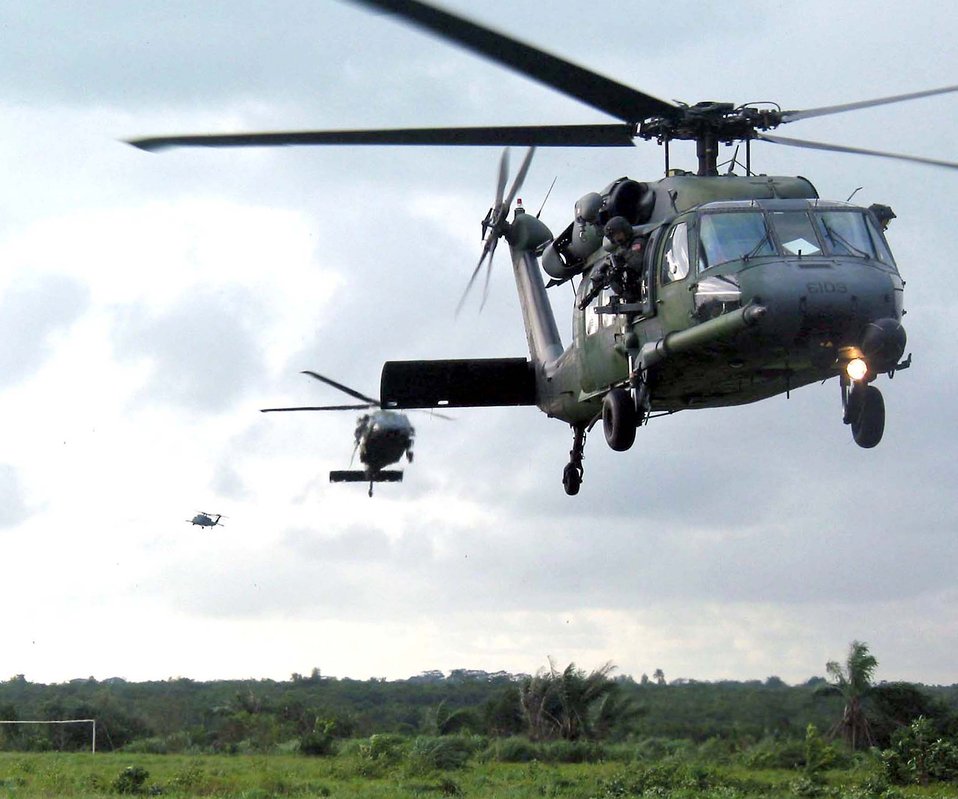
Embassy evacuation

LUNGI, Sierra Leone (AFPN) -- Three HH-60G Pave Hawk helicopters from the 56th Rescue Squadron at Naval Air Station Keflavik, Iceland, carry evacuees from the U.S. Embassy in Liberia on July 23. The squadron is deployed here to provide personnel recovery and emergency evacuation for the Humanitarian Assistance Survey Team in Liberia.